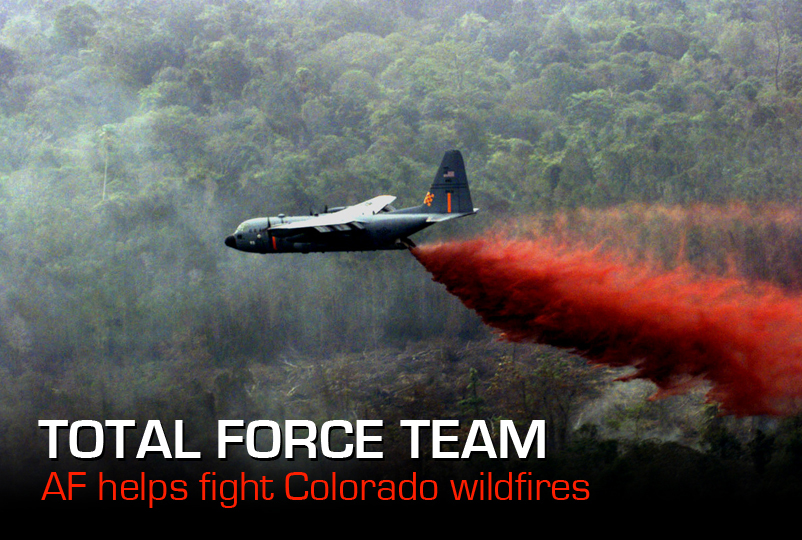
Colorado Fires

MAFFS helps fight fires in Colorado